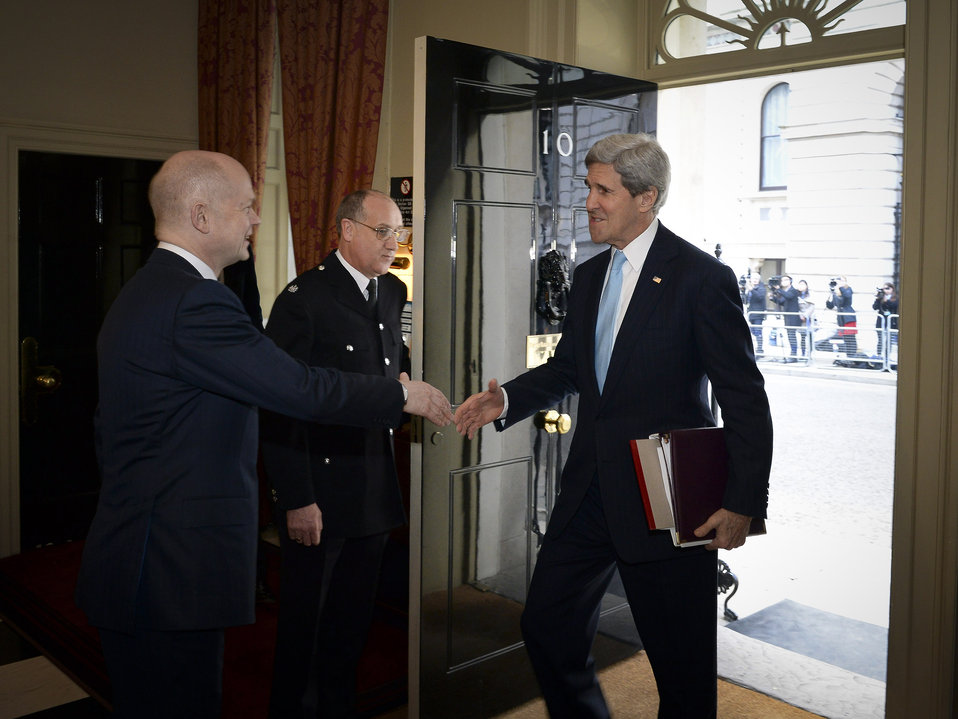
Secretary Kerry is Greeted by British Foreign Secretary Hague

U.S. Secretary of State John Kerry is greeted by British Foreign Secretary William Hague upon entering No. 10 Downing Street in London, United Kingdom, for a meeting with British Prime Minister David Cameron and the Foreign Secretary on March 14, 2014. [Crown photo]